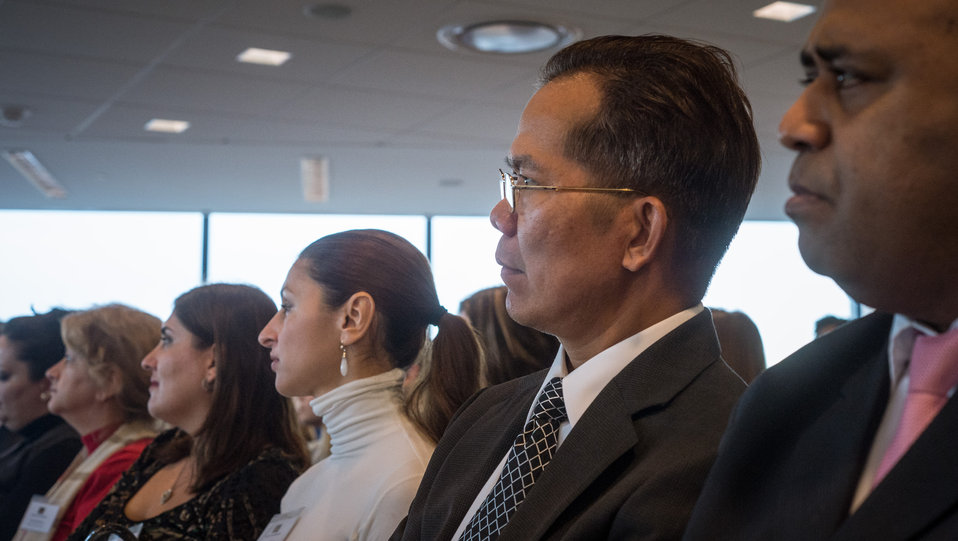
Embassy representatives listen to Agriculture Secretary Tom Vilsack speak at the Share the Season event organized by the U.S. Department of State Office of the Chief of Protocol Diplomatic Partnership Division at the Business Roundtable (BRT) in Washington, D.C. on Thursday, Nov. 21, 2013. BRT is a non-profit association of chief executive officers of leading U.S. companies that encourages embassies and diplomats to be active in local community service projects.